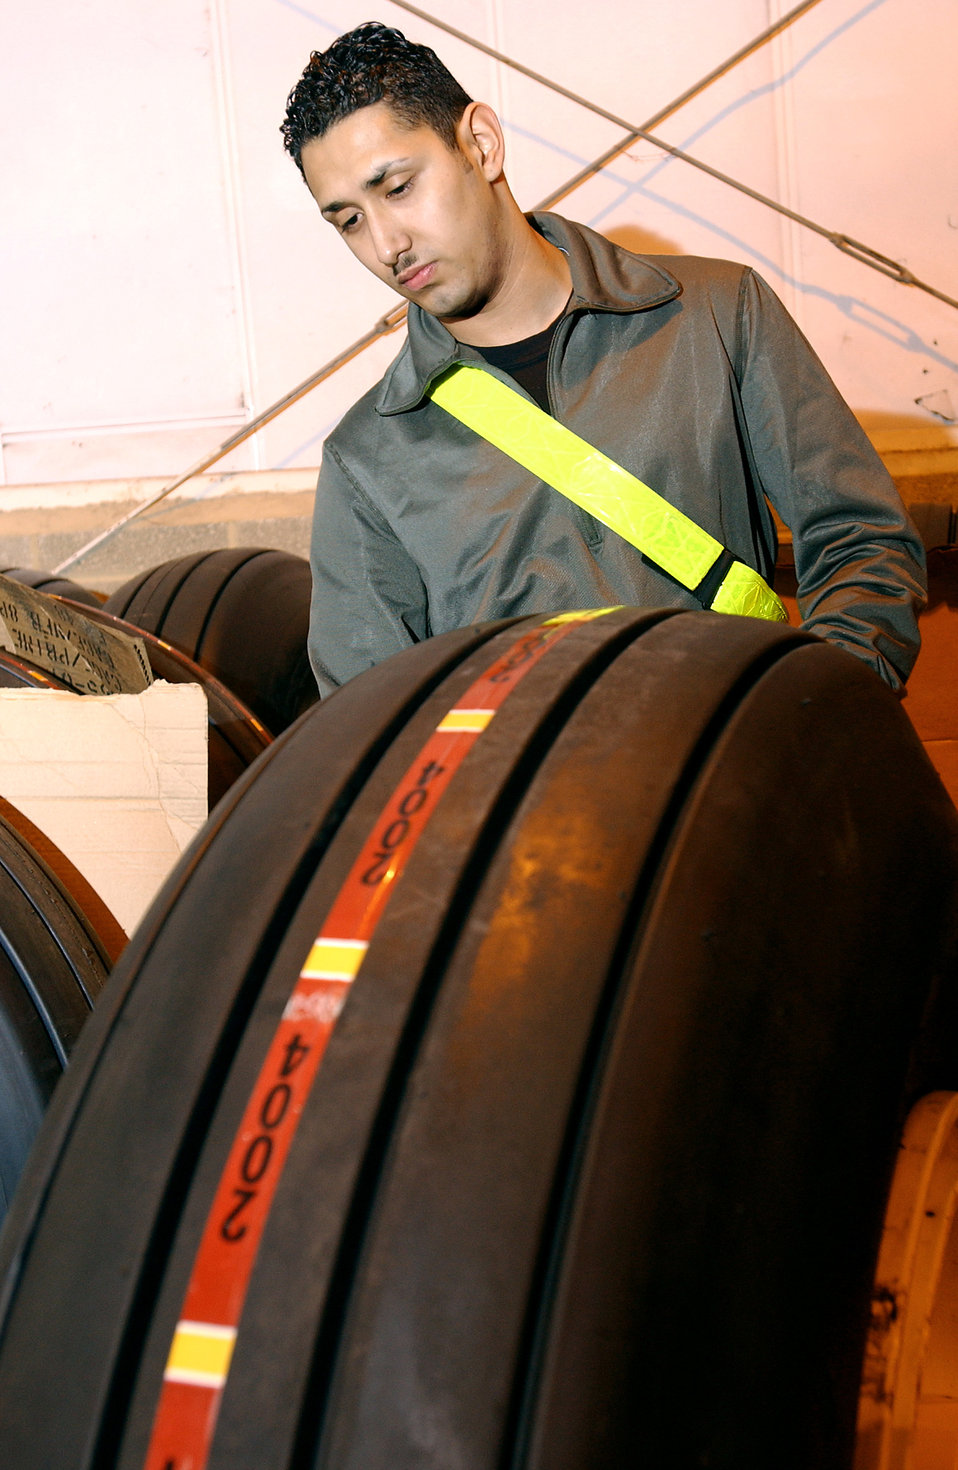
I'll take one big tire

ROYAL AIR FORCE FAIRFORD, England -- Airman Armando Andrade inspects a KC-135 main tire before issuing it a customer here May 12. Personnel are deployed from Royal Air Force Mildenhall while the runway is being re-constructed. Airman Andrade is assigned to the 100th Logistics Readiness Squadron, RAF Mildenhall.